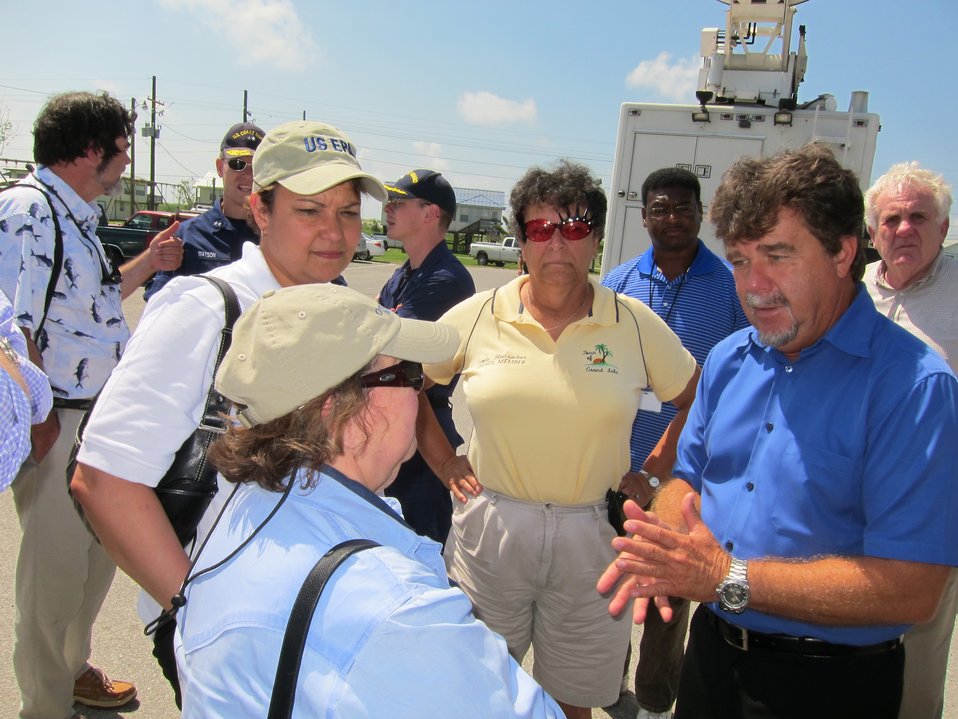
EPA Administrator Jackson

June 11, 2010 - EPA Administrator Lisa P. Jackson with Senator and Grand Isle, Louisiana Mayor